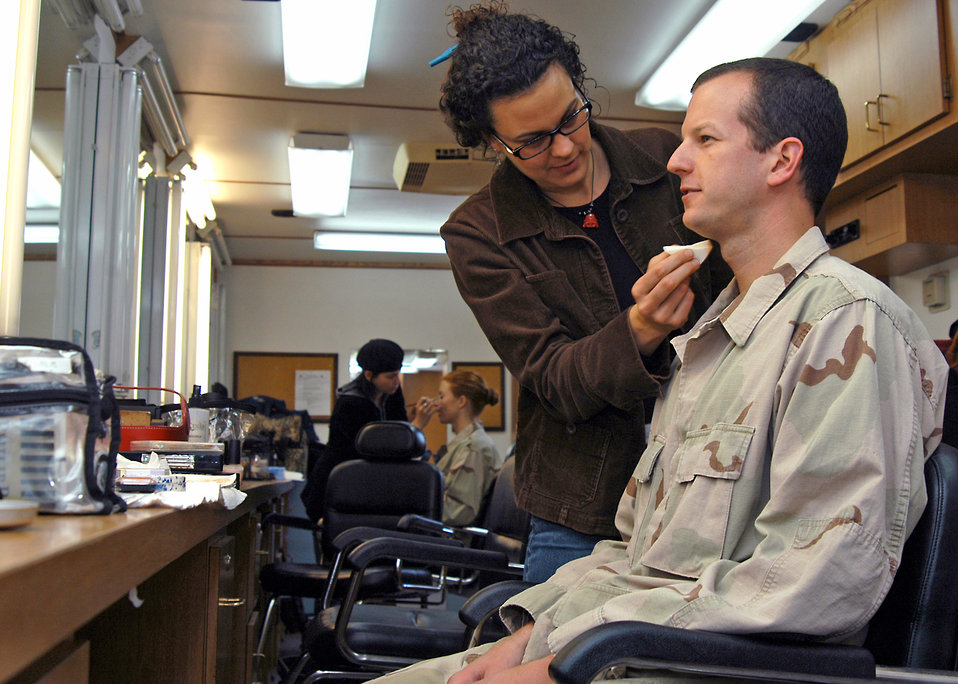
Super Bowl commercial spotlights Airmen

LOS ANGELES -- First Lt. Jeff McGowan has make up applied before shooting his scene for a commercial scheduled to air during the Super Bowl. Lieutenant McGowan is an engineer at the Space and Missile Systems Center at nearby Los Angeles Air Force Base.